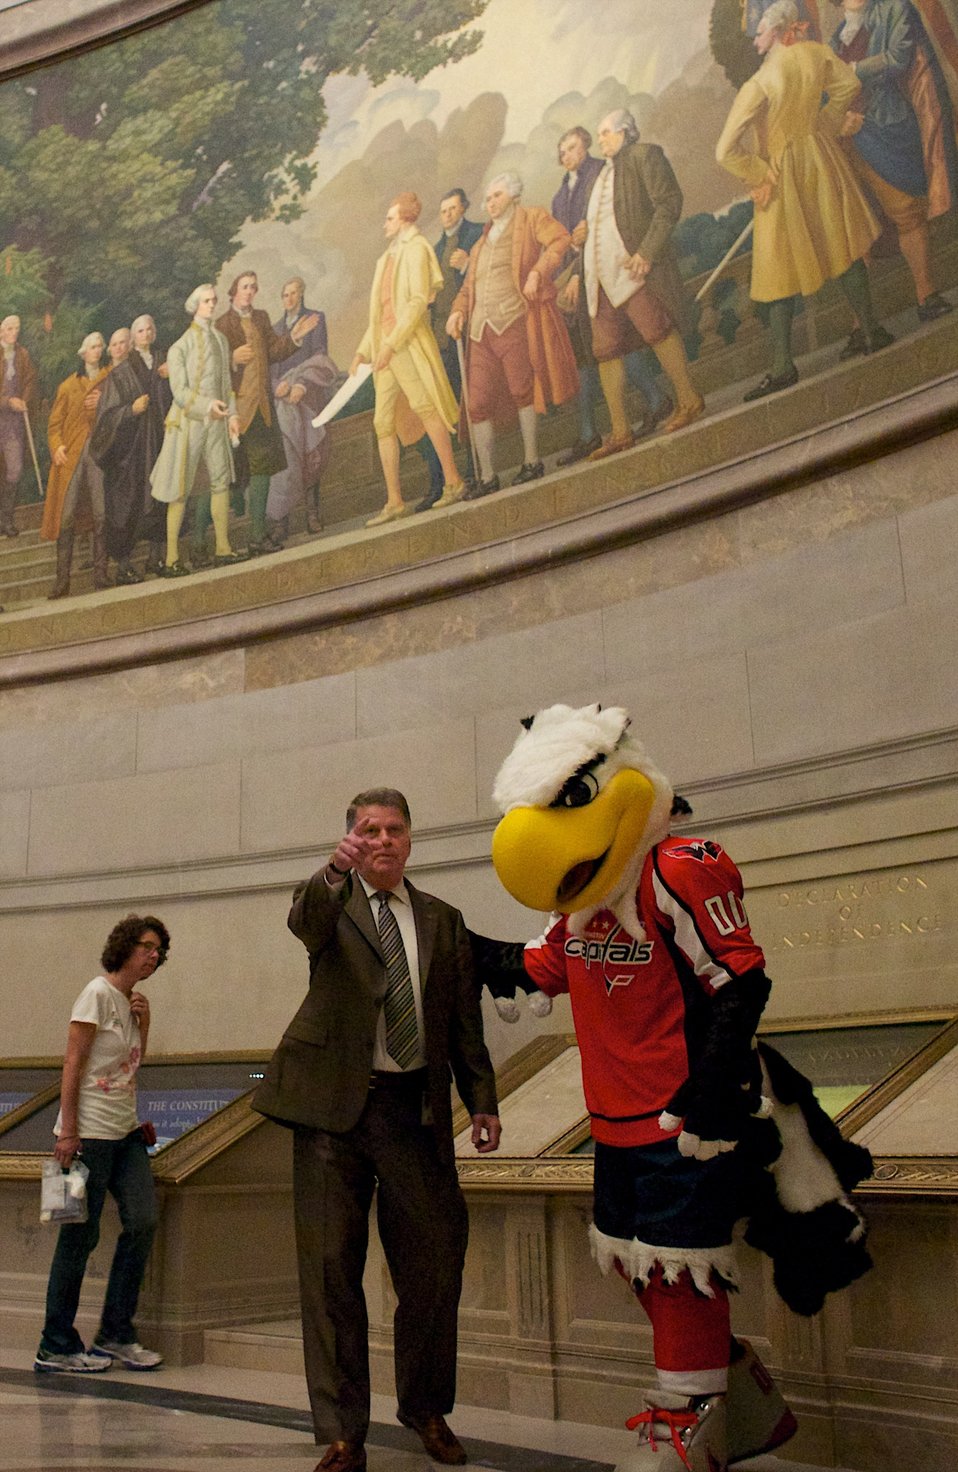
Washington Capitals mascot Slapshot visits the National Archives